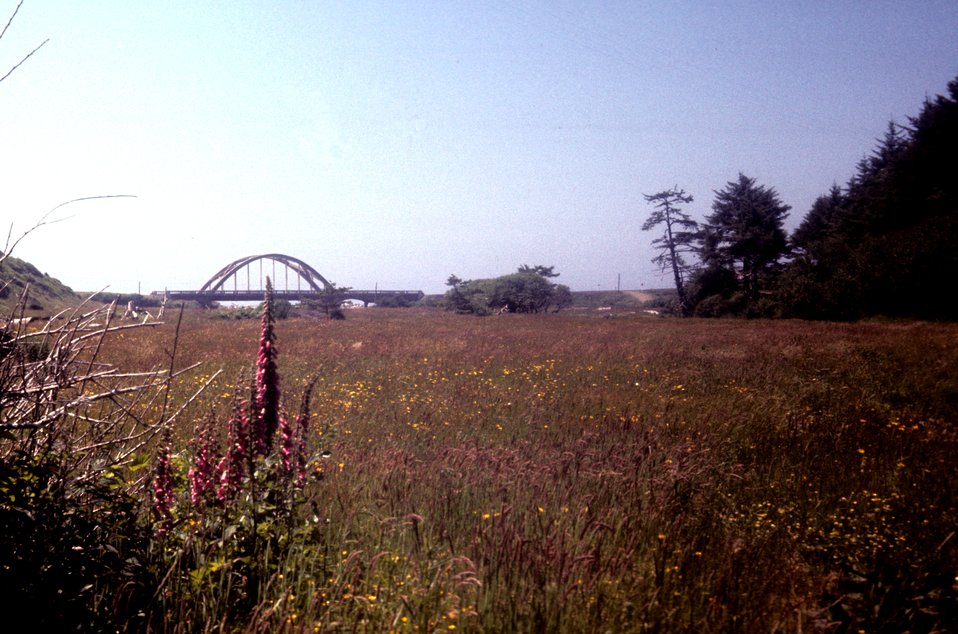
Looking toward the coast and a highway bridge from a wildflower bedecked meadow.